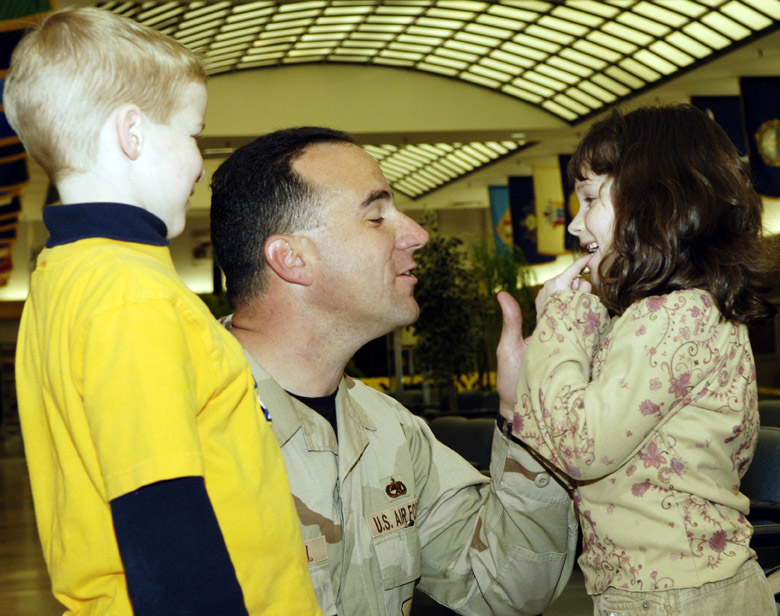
Home again

MCGUIRE AIR FORCE BASE, N.J. (AFPN) -- Tech. Sgt. Jeffrey Mitchell checks out his 6-year-old daughter Silkie's new tooth with his 8-year-old son, Daniel. Sergeant Mitchell returned from Pakistan after two months supporting earthquake relief efforts.